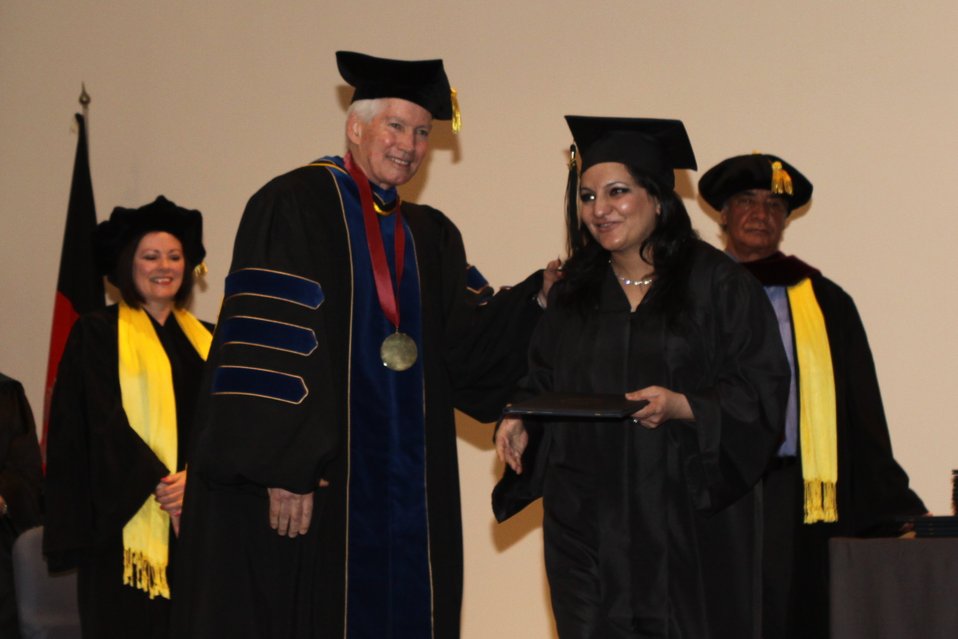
100526 AUAF Graduation 284